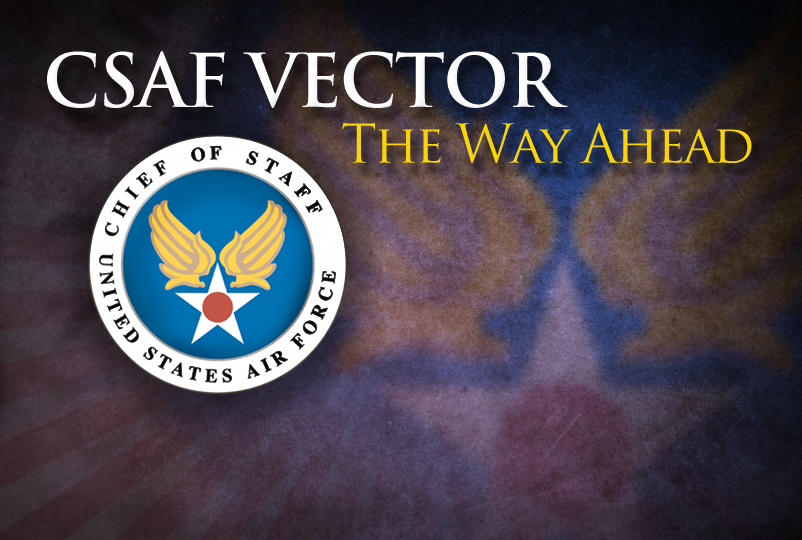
CSAF Vector